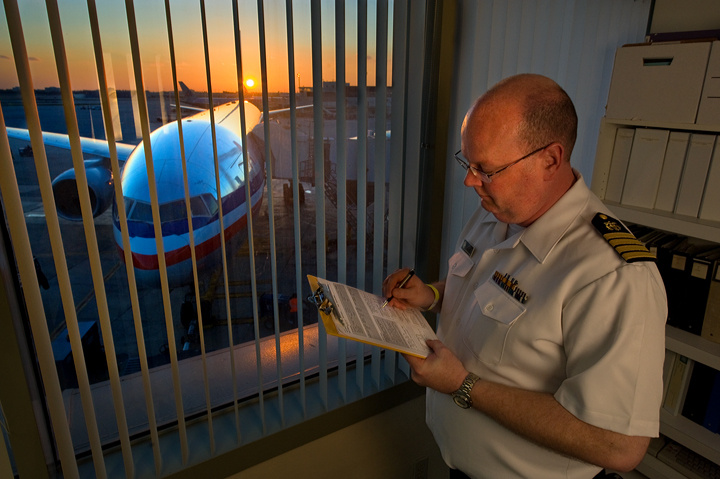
This image was captured during an October 2008 Preparedness Exercise involving a number of Federal and local agencies, including the Centers for Disease Control and Prevention (CDC).